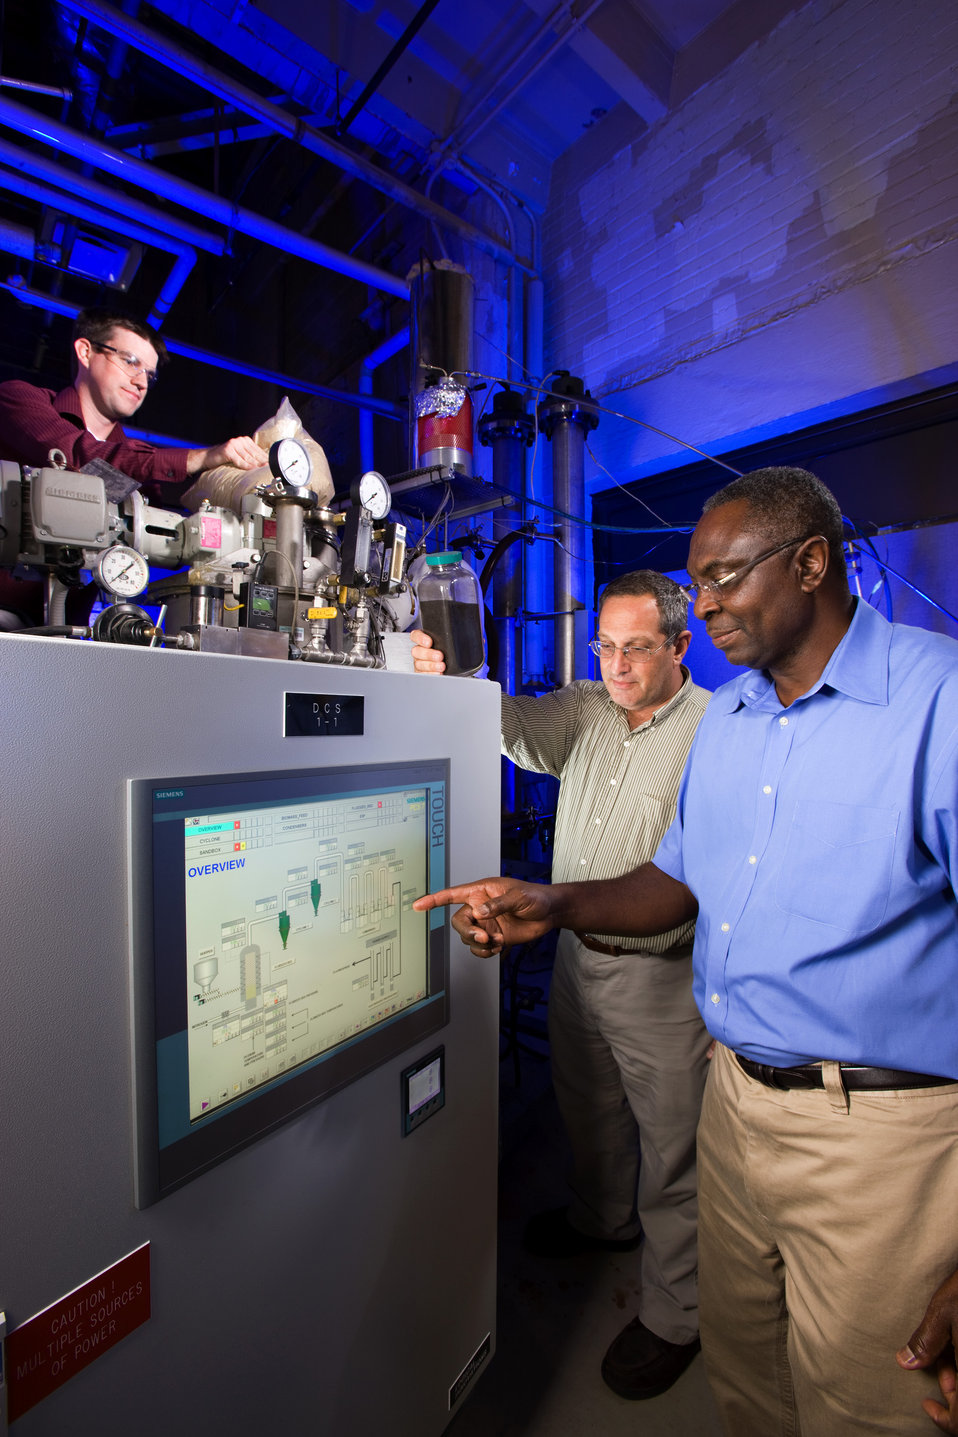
U.S. Department of Agriculture (USDA) Agricultural Research Service (ARS) chemical engineer Akwasi Boateng (right) and mechanical engineer Neil Goldberg (center) adjust pyrolysis process conditions while chemist Charles Mullen (left) loads the reactor with bioenergy feedstock to produce bio-oil. Bio-oil can be produced from barley and its byproducts. Barley-based bio-oil winter barley production will help reduce soil erosion and nitrogen leaching, which are major concerns for farmers in the Chesapeake Bay watershed.